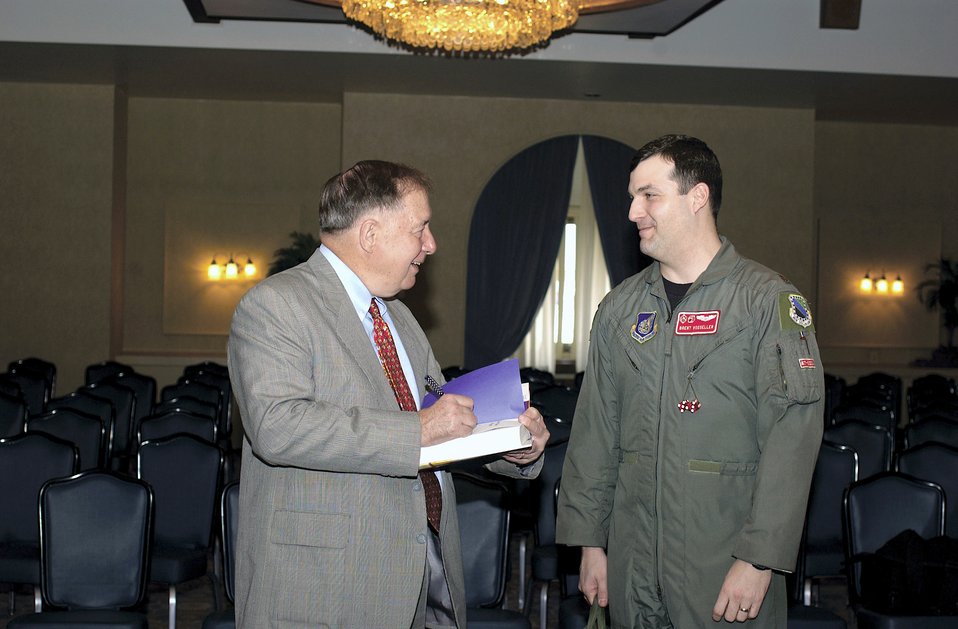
Gen. Charles A. Horner

Retired Gen. Charles A. Horner, former commander of all U.S. and allied air assets during operations Desert Shield and Desert Storm, signs a copy of his book for Maj. Brent Vosseller after talking with servicemembers at Elmendorf Air Force Base, Alaska.